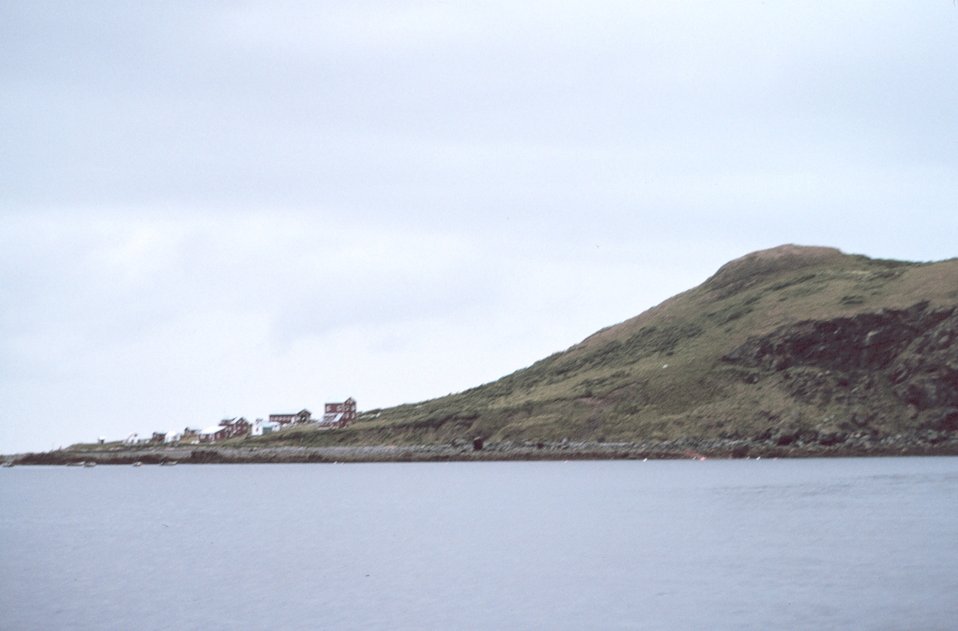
The village of Larsen Bay on Uyak Bay.